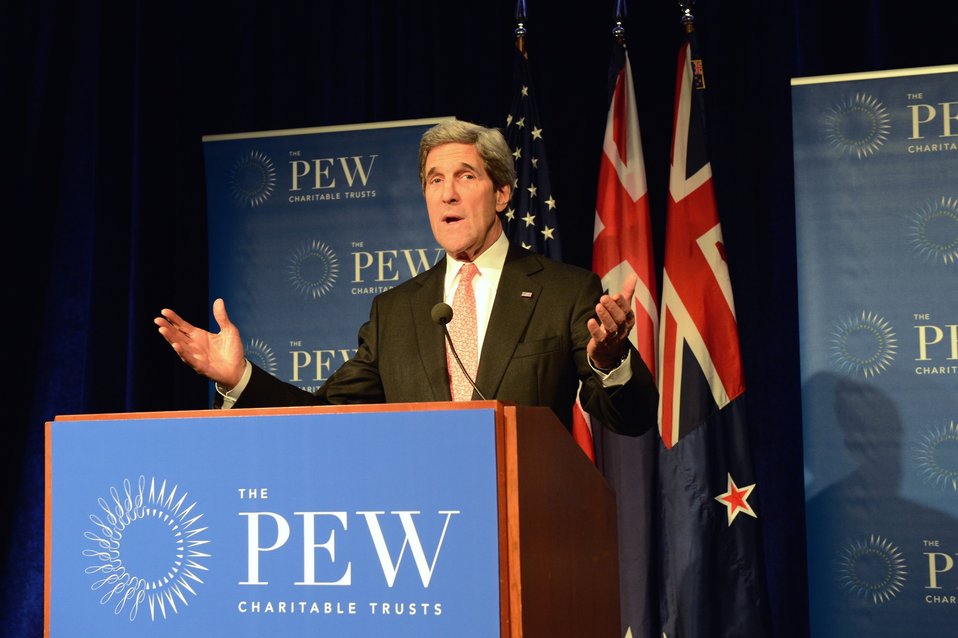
Secretary Kerry Delivers Remarks at the Ross Sea Conservation Reception

U.S. Secretary of State John Kerry delivers remarks at the Ross Sea Conservation Reception at the National Geographic Society in Washington, D.C., on March 18, 2013.